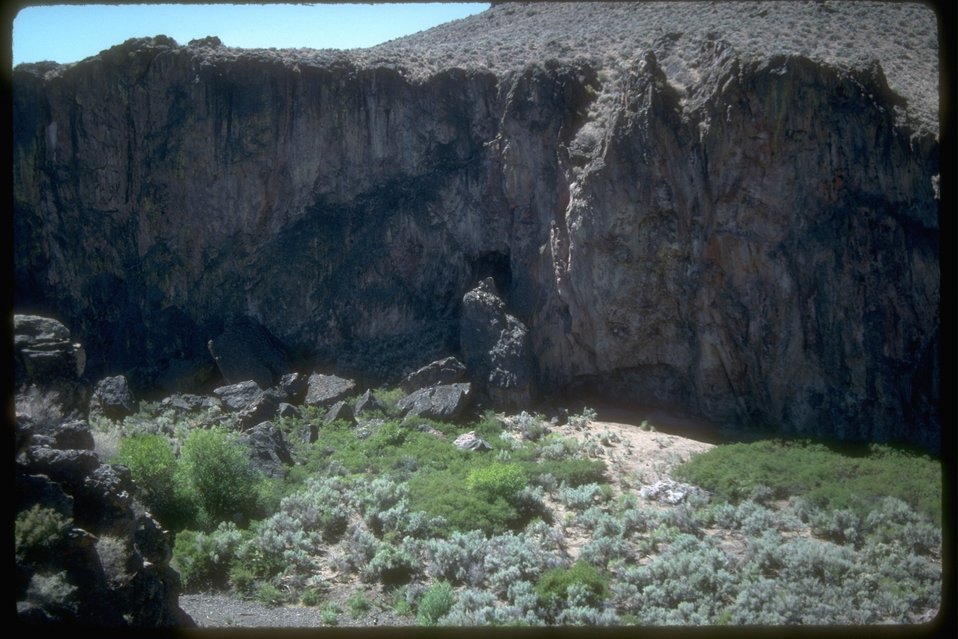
Large cliffs with a rock shelter in the middle are surrounded by sagebrush.